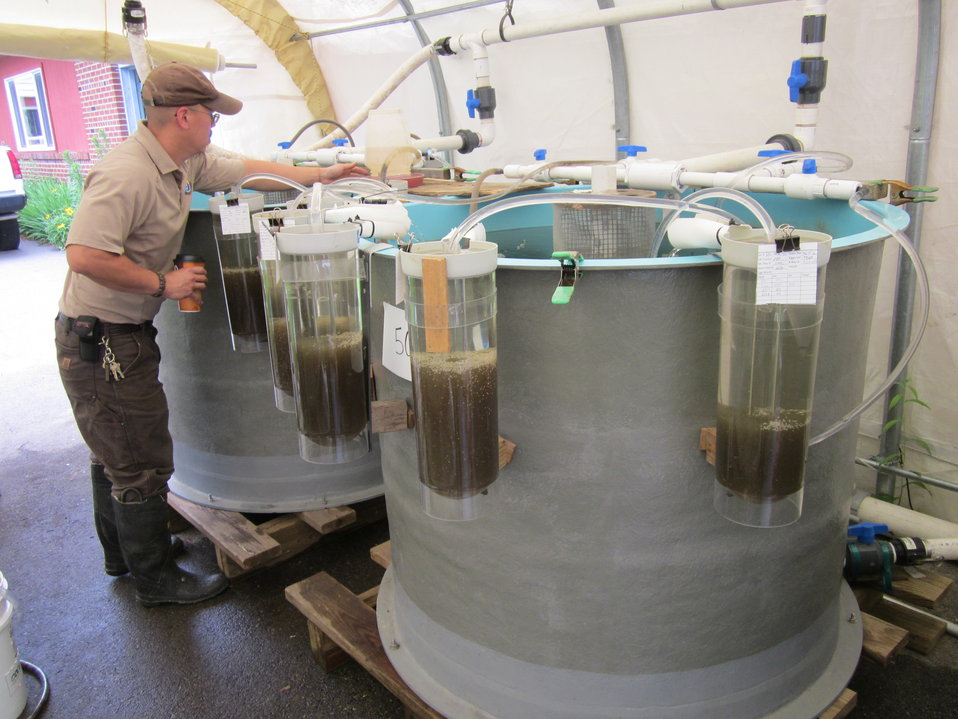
Tending hatching shad

North Attleboro, MA, June 2012: Dan Wong of the U.S. Fish and Wildlife Service checks apparatus on tanks for recently hatched American shad at North Attleboro National Fish Hatchery.

Fish biologists capture adult shad from the Merrimack and Connecticut Rivers and transport them to the hatchery where tank spawning occurs. The fertilized eggs flow through a drain to a control box where they are collected and placed into egg cylinders hung around tanks. When the shad larvae hatch in about 4 days, they swim into the tanks through chutes at the top of the cylinders. The larvae are marked with oxytetracycline and released after a few days, for a turnaround time of about a week from egg to release in the Merrimack and Charles Rivers.

In 2012, the hatchery quadrupled past production for a projected total of 7-8 million shad.